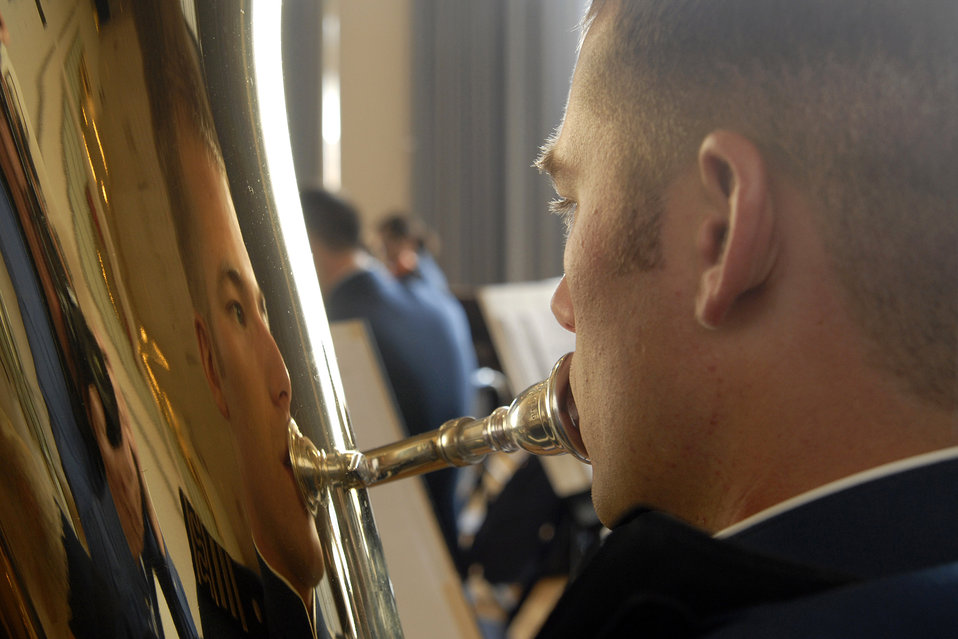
Academy salutes founders

Senior Zachariah Thuli plays the tuba during the cadet sponsor social held April 5 in Arnold Hall at the U.S. Air Force Academy in Colorado. The social honored the 3,500 cadet sponsors; those men, women and families who open their hearts and homes to members of the cadet wing to enhance cadet life and develop officers of character. Cadet Thuli is a member of the Cadet Orchestra.